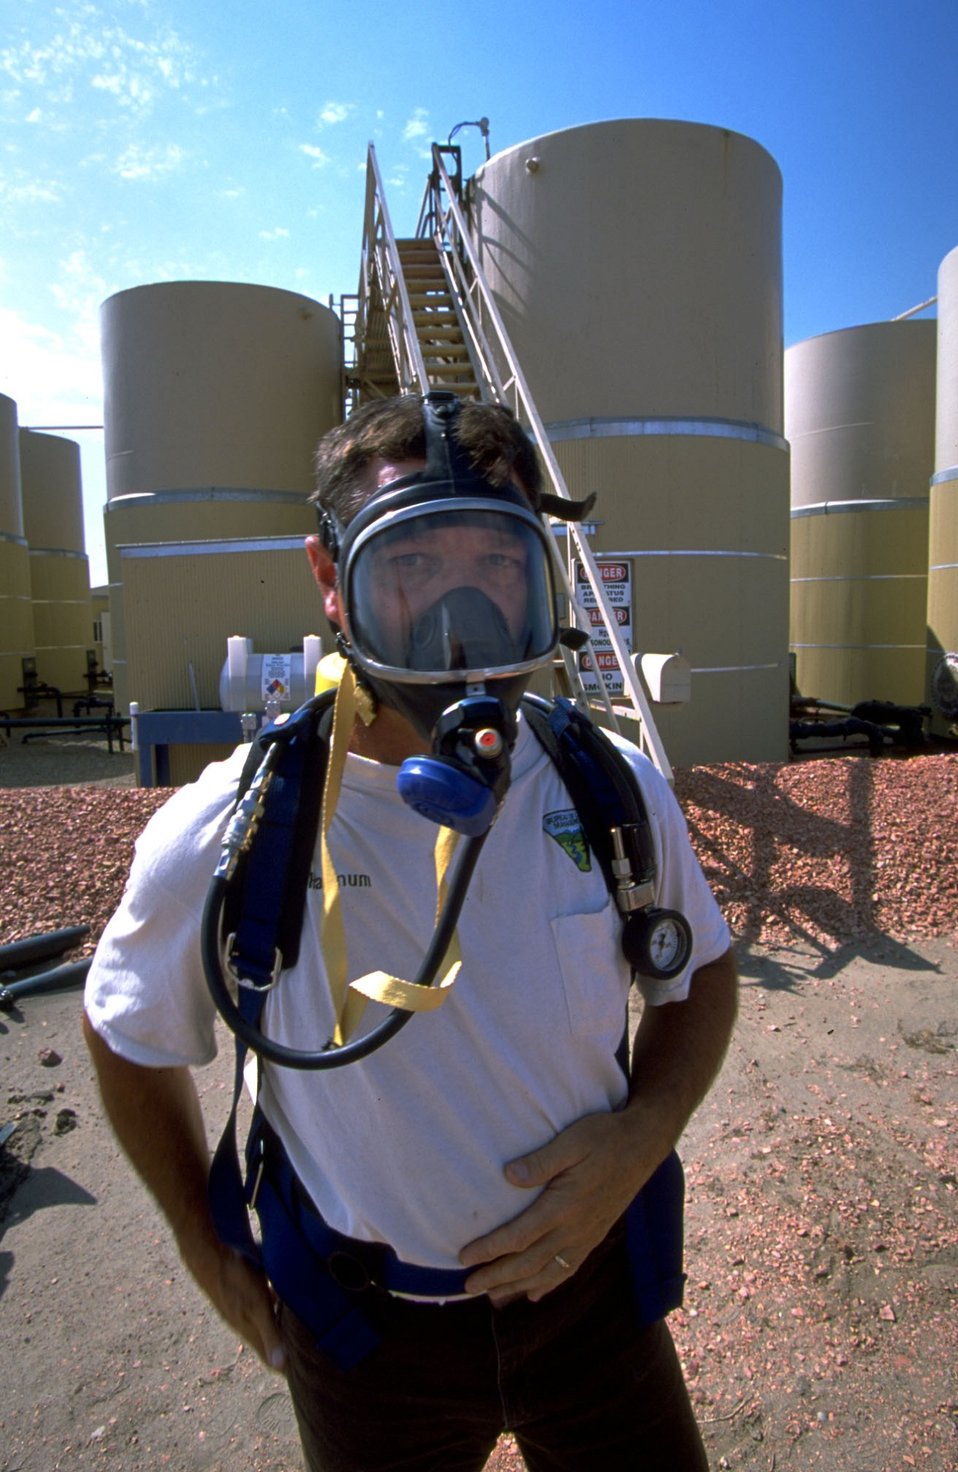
BLM petroleum engineering technicial in protective mask and gear